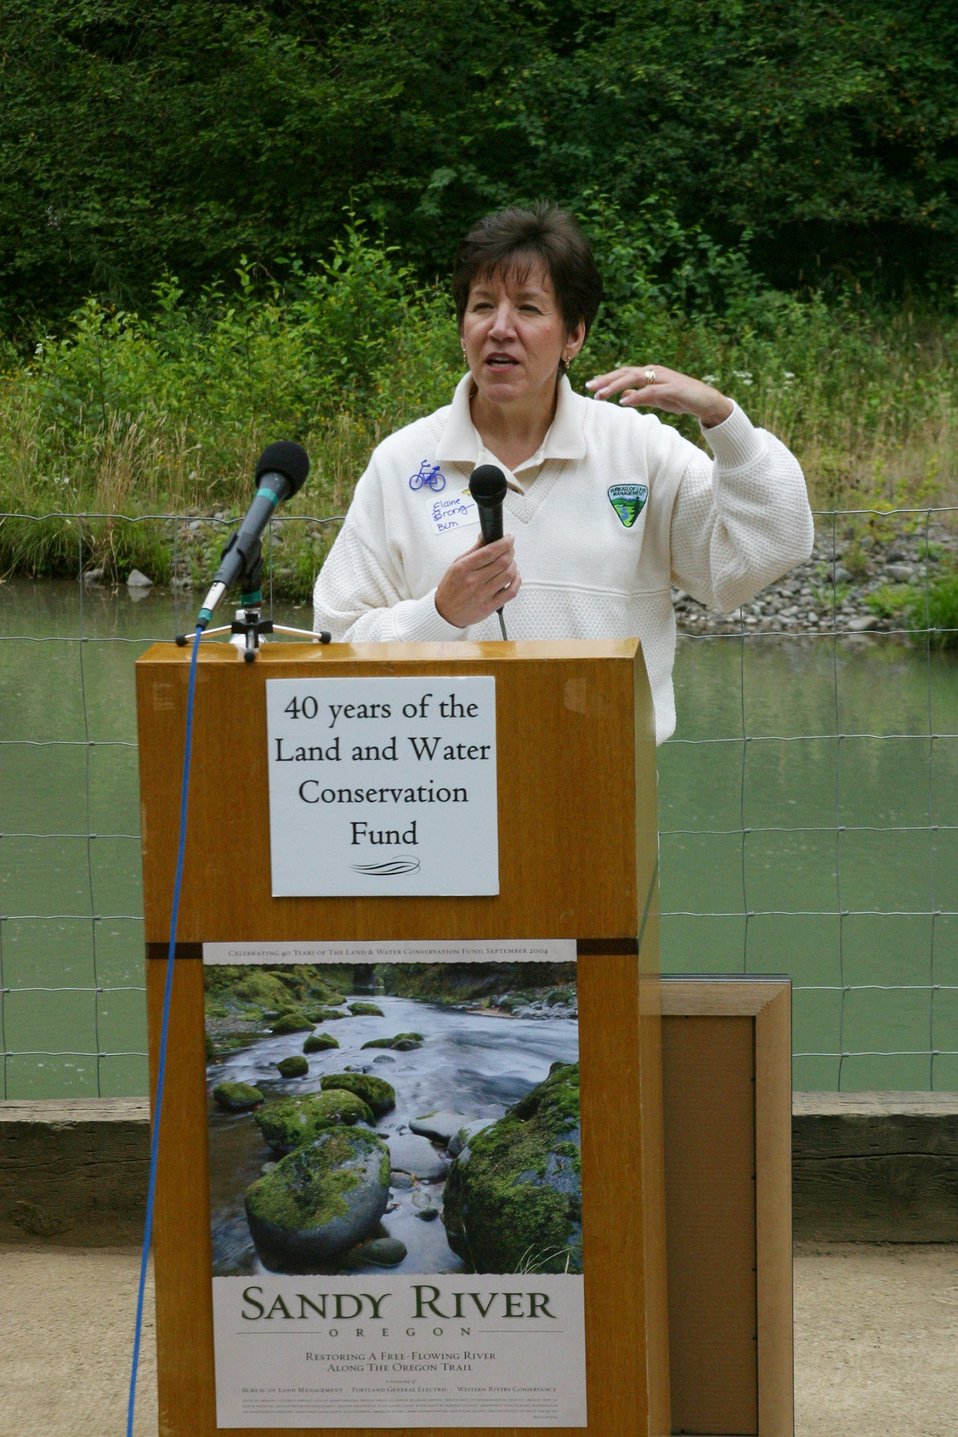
Elaine Brong, BLM State Director for Oregon, speaks during the Four C's Award ceremony at the Little Sandy Dam. The award was presented by Kathleen Clarke, BLM Direcgor, to PGE and the Western River Conservancy.